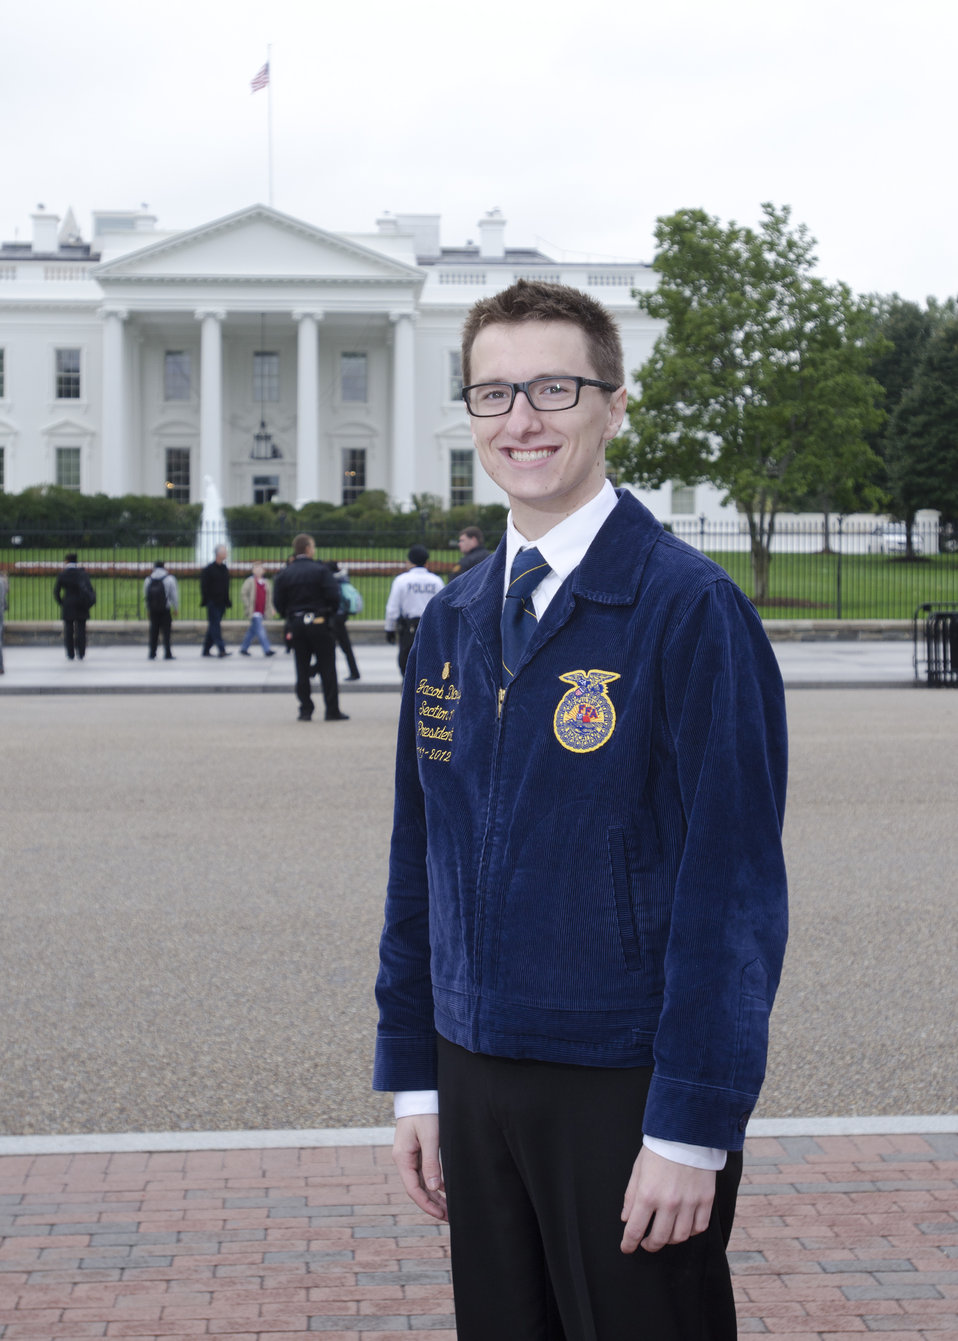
Champion of Change recipient Jacob Dickey in front of the White House in Washington, D.C. on Tuesday, Oct. 9, 2012. Dickey is a sophomore studying Agricultural Education at the University of Illinois, Urbana-Champaign. IL and has combined 7 years of FFA leadership experience in a variety of officer positions at the local and state levels. He brought together a number of prominent businesses and civic organizations, including the Special Olympics and the United Nations World Food Programme, to develop a yearlong campaign that encouraged young students and future leaders to ‘live to serve’. The campaign reached nearly one thousand agricultural education students and FFA members. After graduation from the University of Illinois, Jacob plans to become a high school agricultural instructor and agricultural advocate.